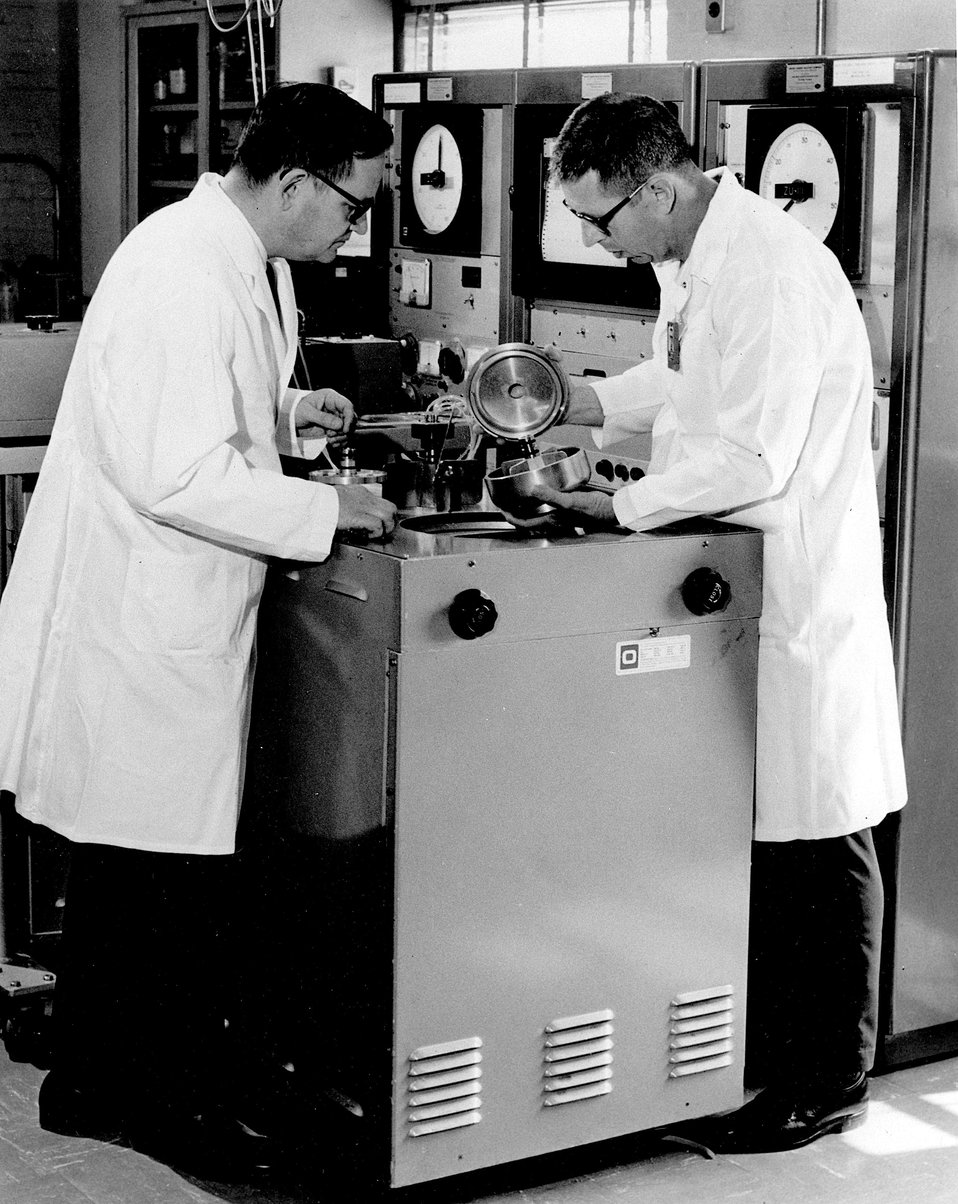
Centrifuge specialist discuss operation of an experimental titanium centrifuge rotor (designated BXXIV) fabricated in the Oak Ridge Gaseous Diffusion Plant for the joint AEC-NIH MAN Program. Circa 1967.